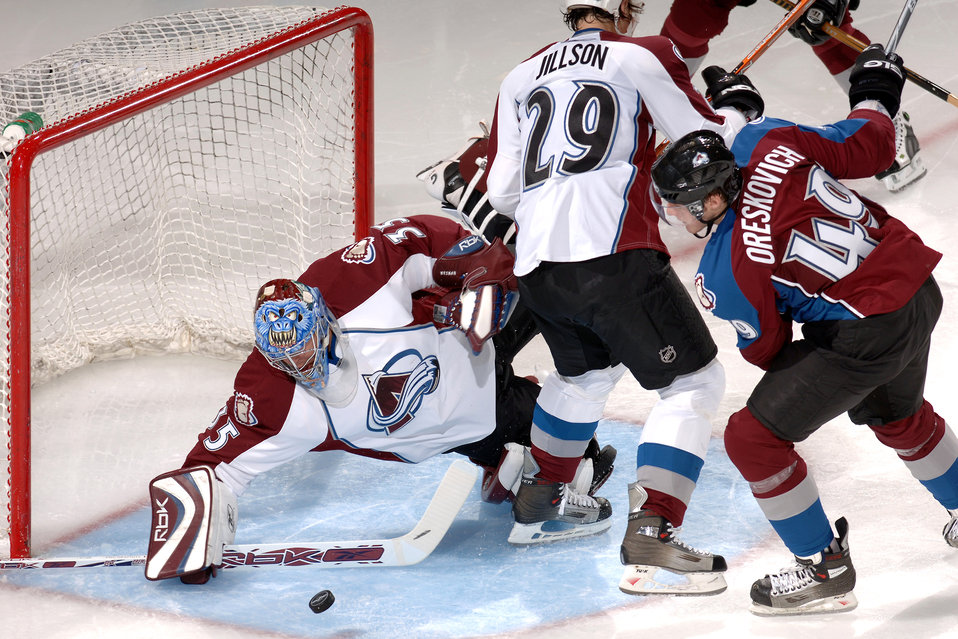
Avalanche breaks the ice at Academy

Colorado Avalanche rookie goalie Tyler Weiman slides to make a save in traffic during the Burgundy and White intra-squad scrimmage Sept. 16 at the Cadet Ice Arena at the U.S. Air Force Academy in Colorado Springs, Colo. was the first time an NHL team ever played at the Academy.